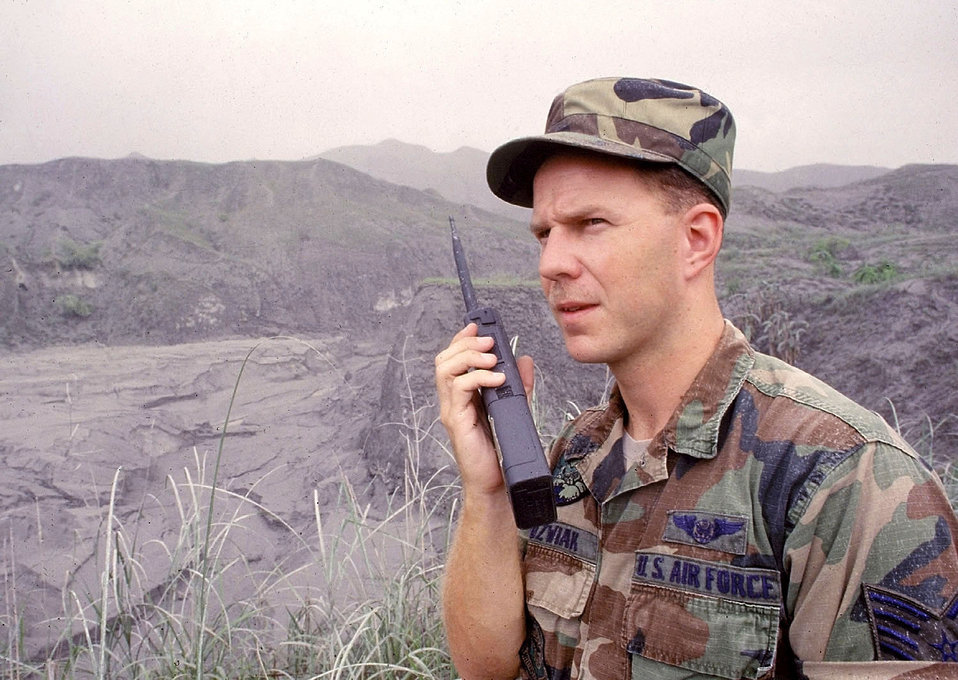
Lahar

CLARK AIR BASE, Philippines -- In 1991 then-Staff Sgt. Tom Jozwiak, (now a SMSgt), from the Detachment 3, Combat Camera Squadron at Clark AB, observes the lahar, (hot mudflow), that stopped right outside the Andersen Hill base housing area during the eruption of Mount Pinatubo volcano ten years ago. The lahar and ash fall from the volcano resulted in extensive damages to major facilities on base. Clark AB closed down in November of 1991 ending the precense of America.